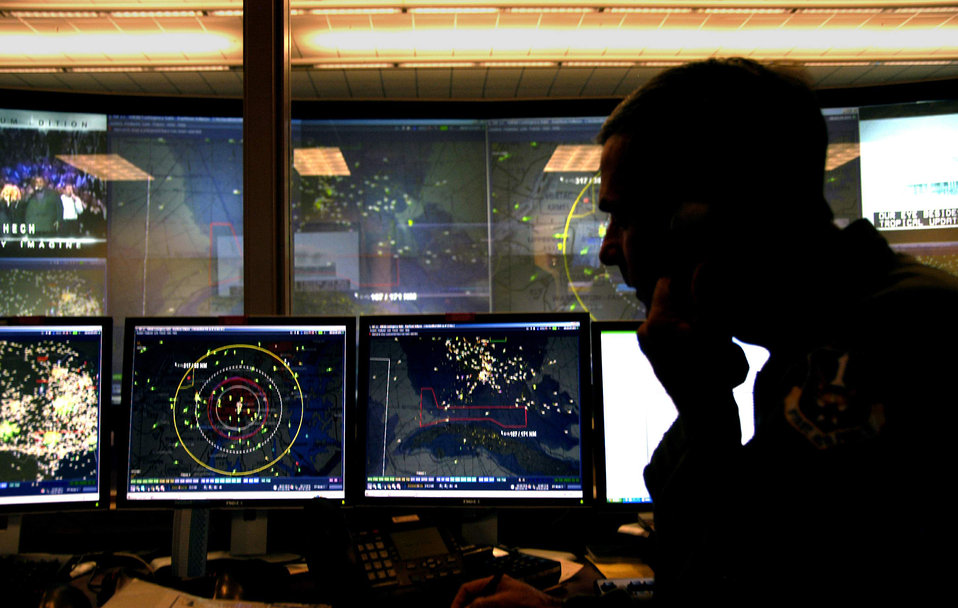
EPLOs

Col. Michael Hare, Air Force National Security Emergency Preparedness director, monitors Hurricane Gustav on the operations floor of the air operations center at Tyndall Air Force Base, Fla., prior to landfall. AFNEP officials are in charge of deploying emergency preparedness liaison officers, when requested, to coordinate military assets to support civil authorities.